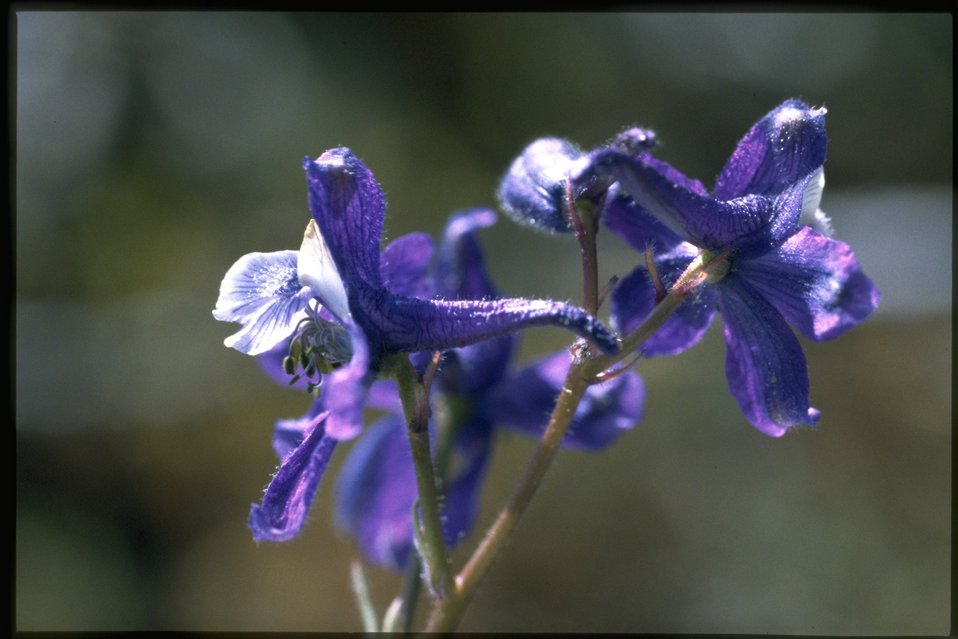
Closeup shot of Larkspur wildflowers (Delphinium Sp.).